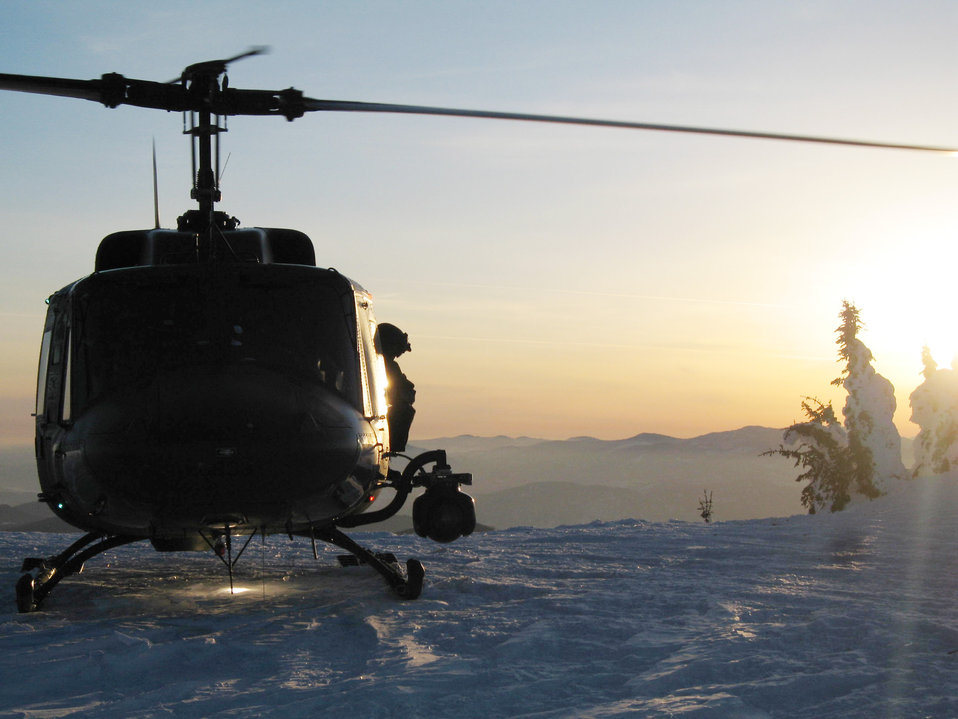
Fairchild Airmen rescue hikers

A UH-1N Iroquois sits on the top of Calispel mountain in the northern survival training area June 26 in Washington. Airmen of the 36th Rescue Flight from Fairchild Air Force Base, Wash., rescued a hiker from Fort Lewis, Wash., who tumbled more than 1,000 feet down a mountain just west of Wenatchee, Wash.